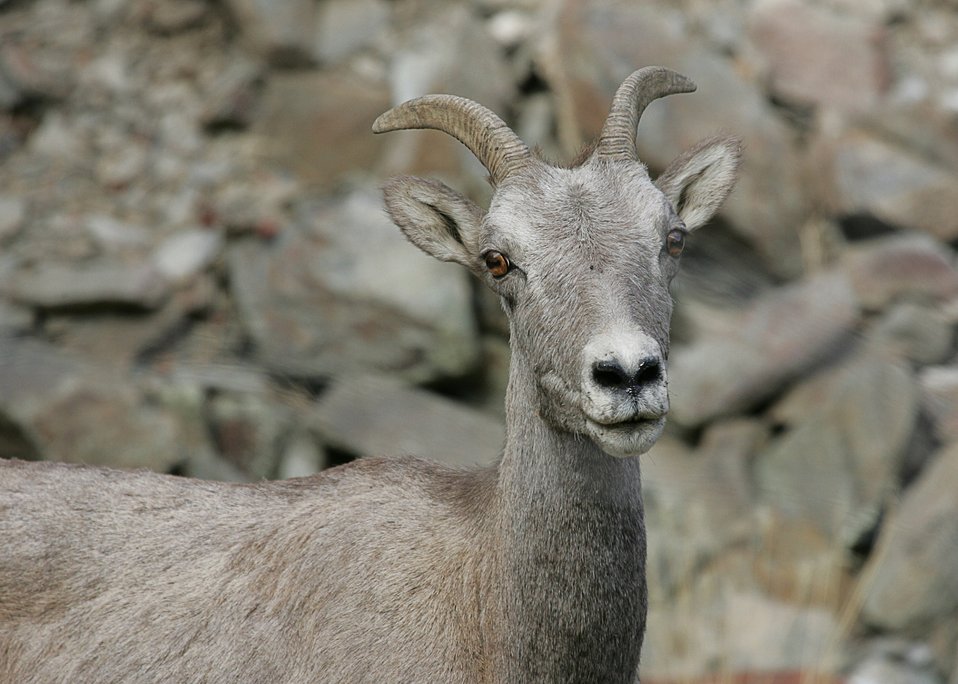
Bighorn sheep in the Connor Creek watershed in eastern Oregon.